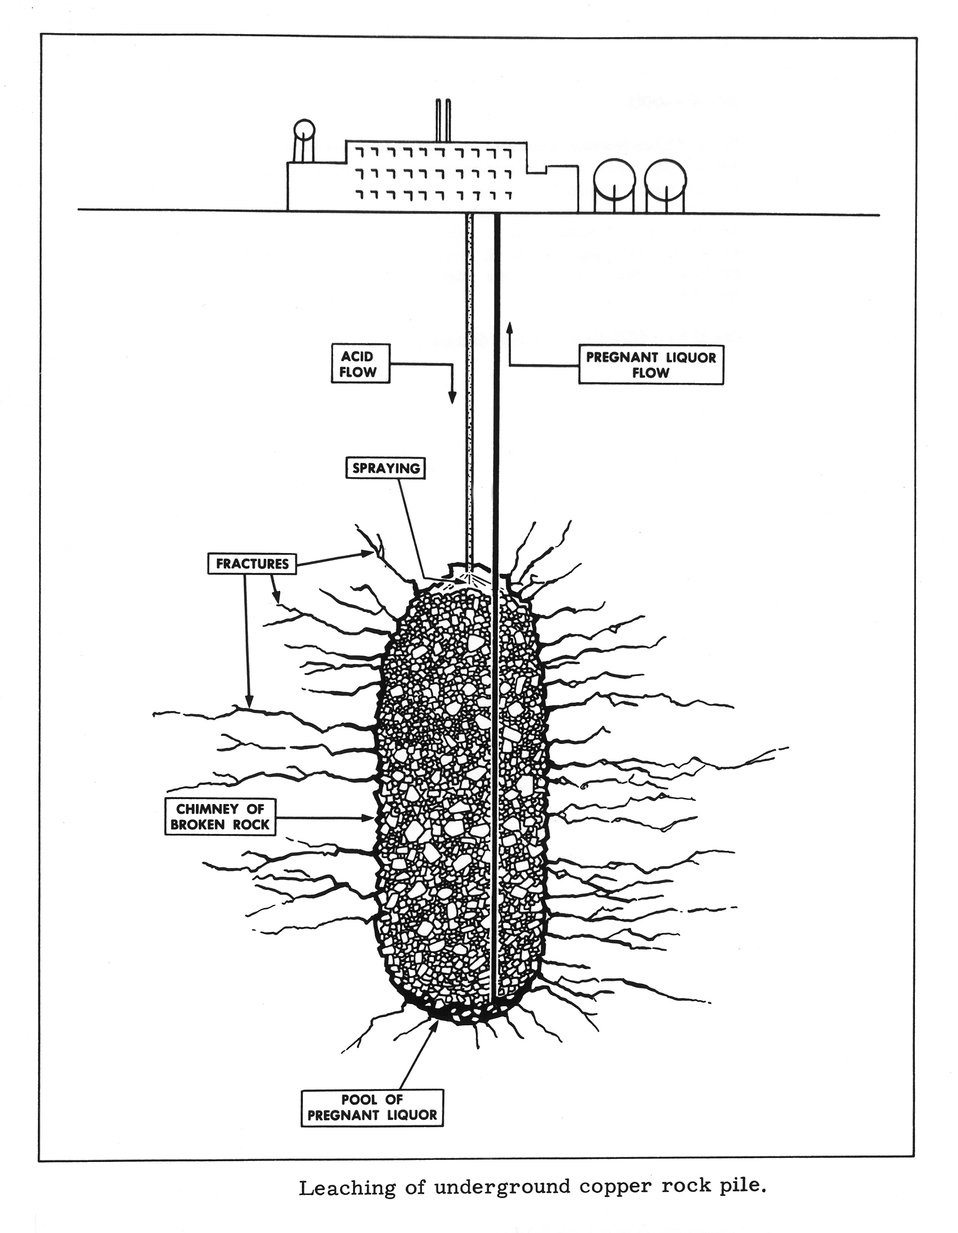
CONTROLLED THERMONUCLEAR RESEARCH...TOROIDAL CONFINEMENT... The spherator (top) and tokamak (bottom) are both asymmetric toroidal confinement geometries, using a toroidal magnetic field based on external coils, and a poloidal magnetic field based on current inside the plasma. c. 1971